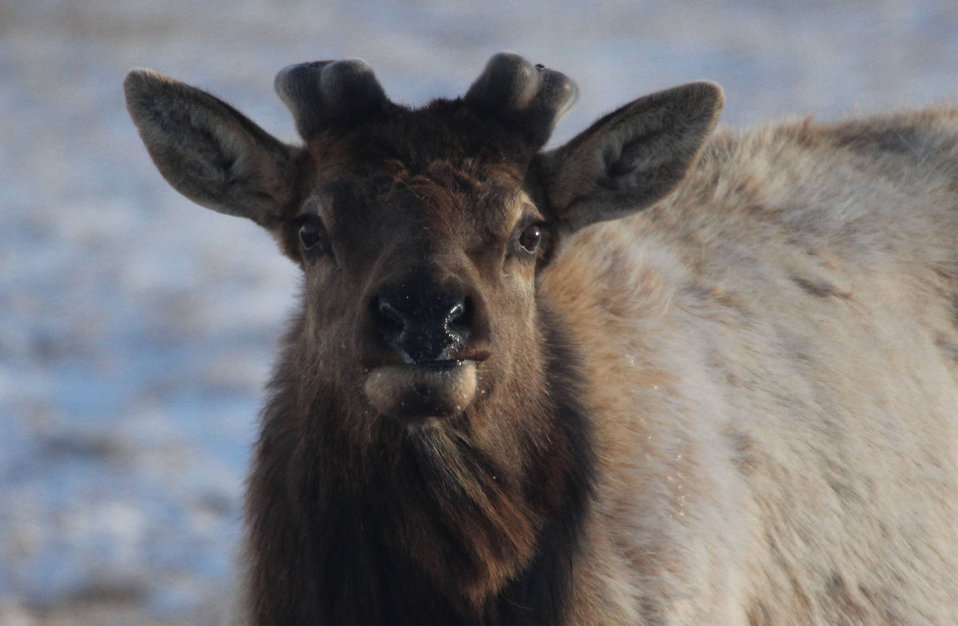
Not Wasting Time

A new set of elk antlers starts growing back as soon as the old ones shed. This fella's not wasting any time.